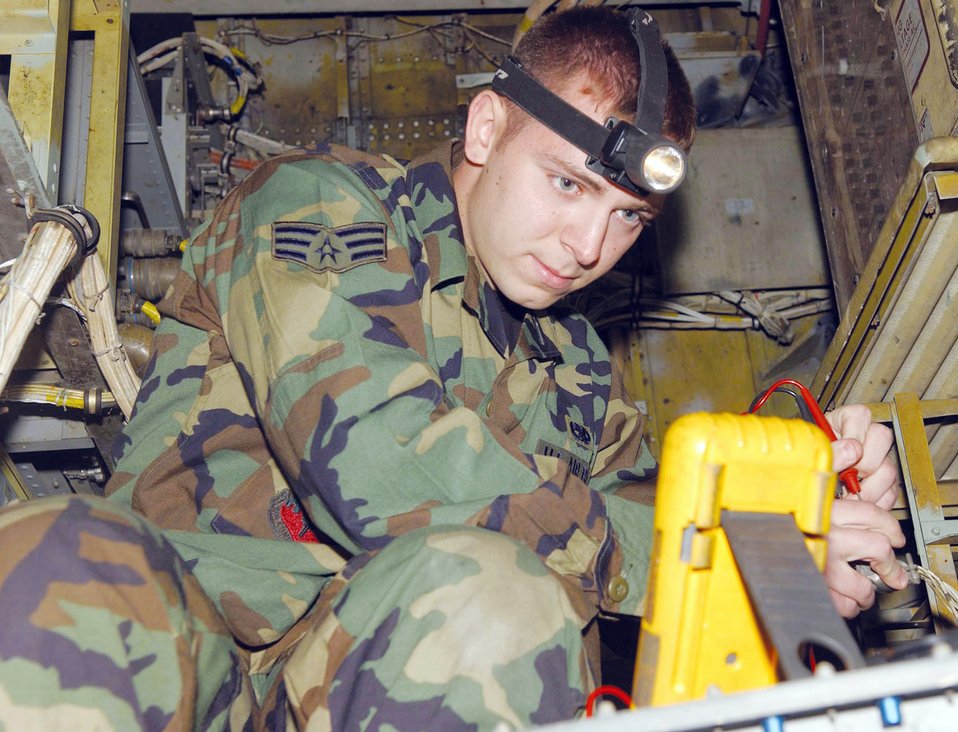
Cool check

BARKSDALE AIR FORCE BASE, La. (AFPN) -- Senior Airman Antonio Caserta checks the voltage of a cannon plug. The plugs are used in aircraft air conditioning power systems. Airman Caserta is an electrical and environmental journeyman with the 2nd Aircraft Maintenance Squadron here.